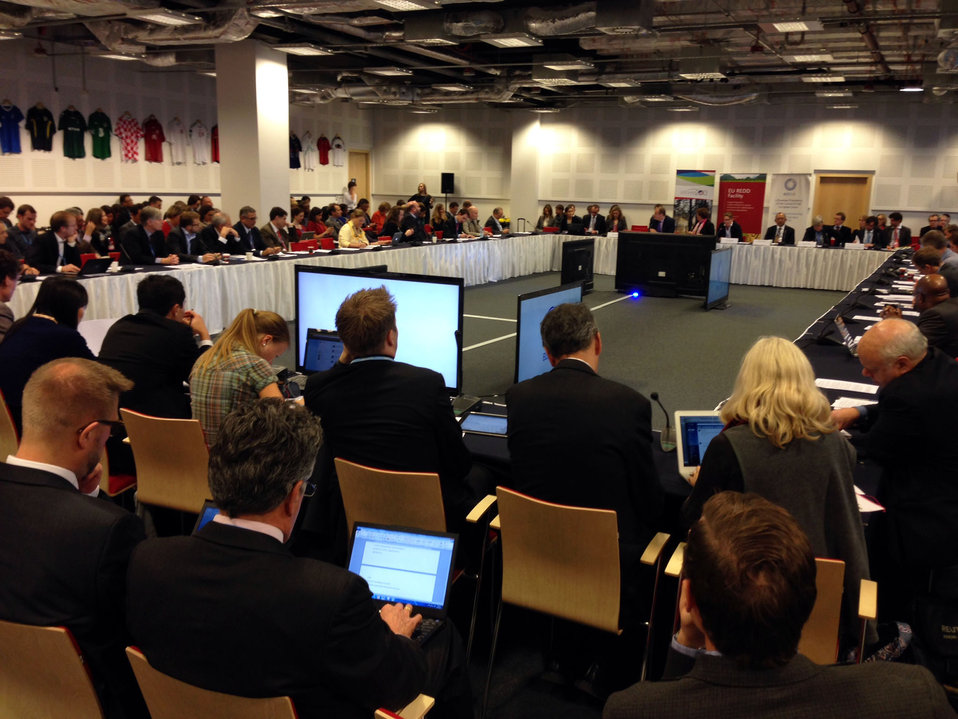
Representatives From Partner Countries Announce Funding for the Initiative for Sustainable Forest Landscapes

Representatives from the U.S., U.K., Germany, Norway, and Indonesia announce more than $250 million to launch the Initiative for Sustainable Forest Landscapes at the U.S. Center at the 19th Session of the Conference of the Parties to the UN Framework Convention on Climate Change (COP19) in Warsaw, Poland, on November 20, 2013. The U.S. has announced $25M to support the initiative.